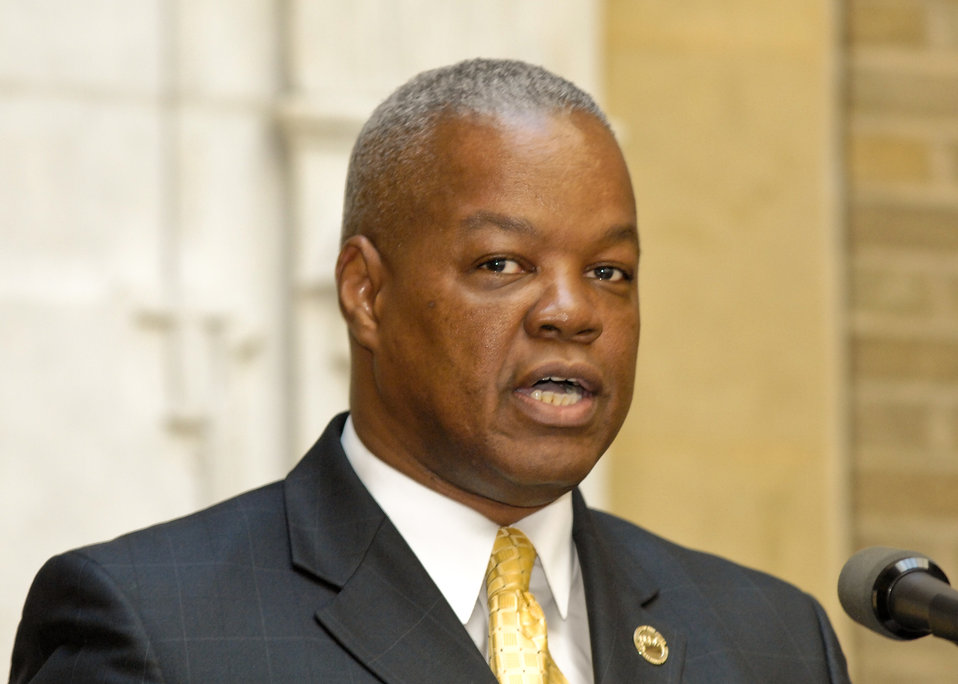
US Department of Agriculture Deputy Chief Information Officer Charles McClam, addresses the Departmental Management Interns at the US Department of Agriculture in Washington, DC, on Tuesday, June 8, 2010. USDA Photo 10di1394-07